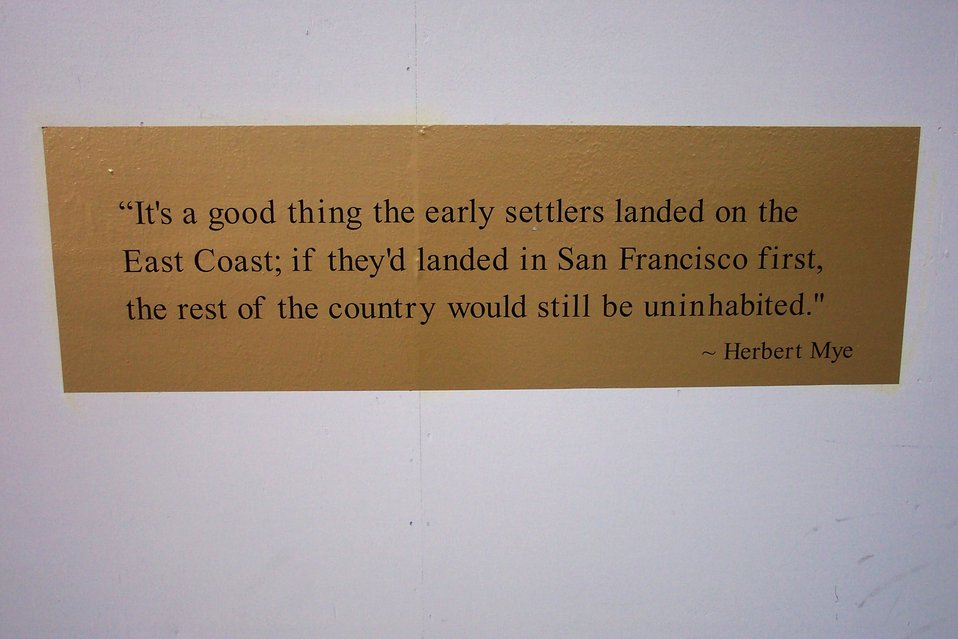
A sign on a construction site along the Embarcadero in San Francisco.